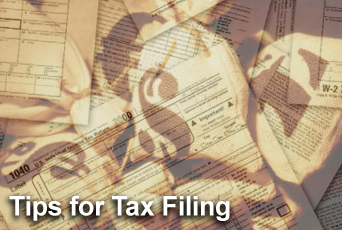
Tax filing tips

It's tax season again and new tax codes have changed some credits and refunds. Knowing what credits and deductions to claim allows Airmen to keep more of their own money.